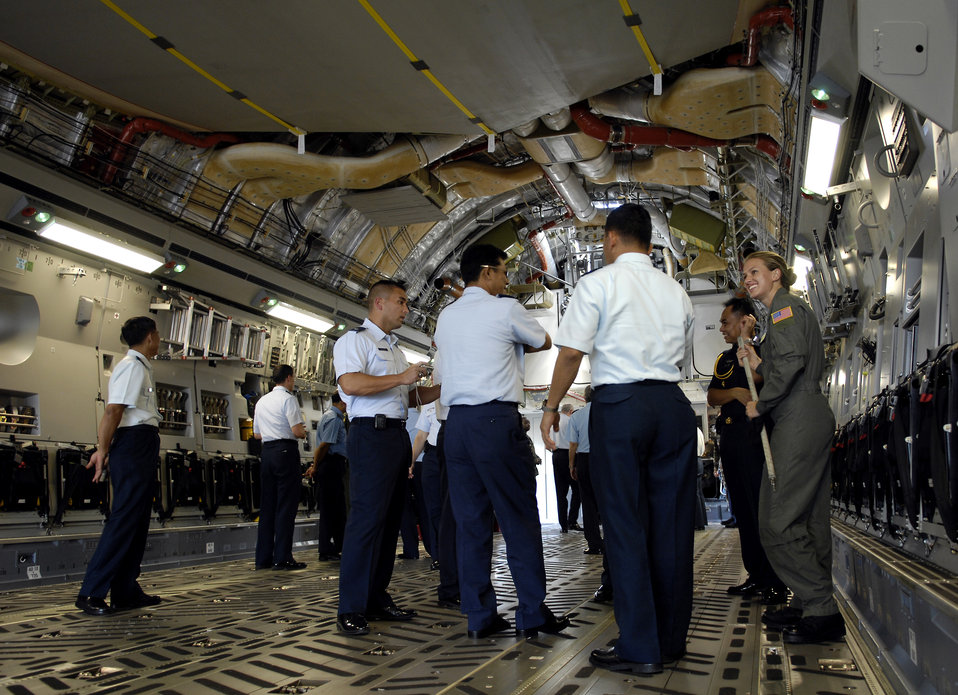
Pacific conference builds enlisted forces

Senior Airman Lisa Long discusses the C-17 Globemaster III with members of the Pacific Rim Airpower Symposium, Sept. 20, at Hickam Air Force Base. Officials added a noncommissioned officer's development course to this year's conference. Airman Long is a loadmaster with the 535th Airlift Squadron.